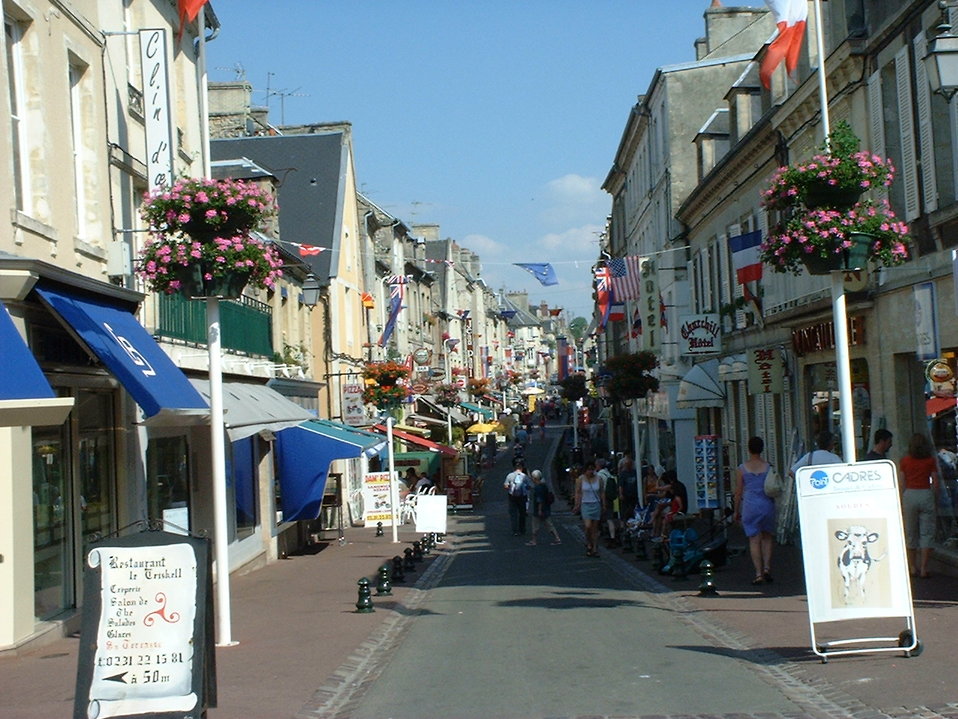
Photo Streets of en:Bayeux, en:France taken on July 3, 2001.